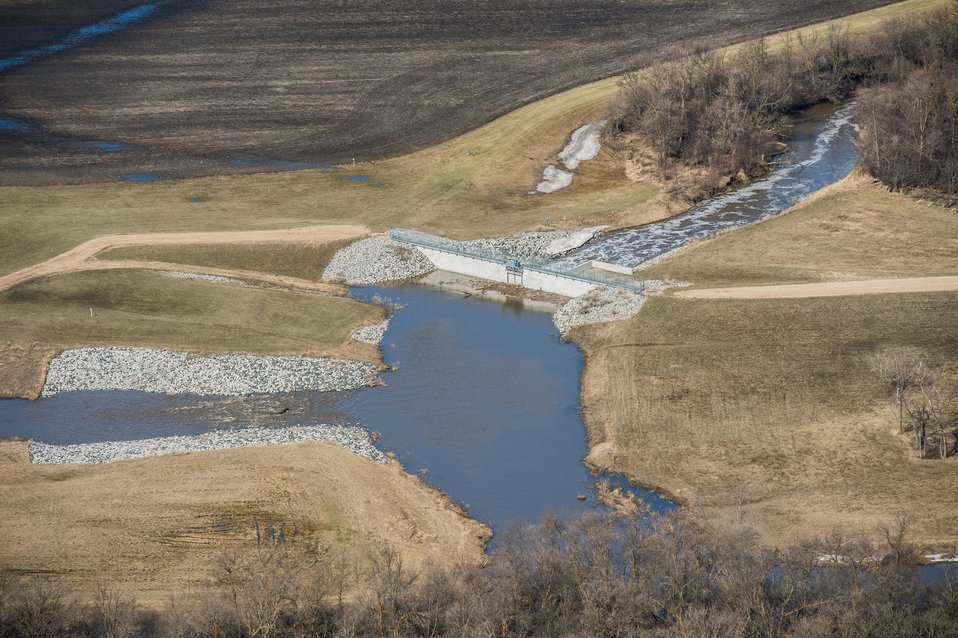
Snake River Diversion, a Public Law PL83-566 Small Watershed Program, at Warren, MN, on Wednesday, May 1, 2013. For information about this and other programs from the USDA Red River Basin Initiative (RRBI) please see www.mn.nrcs.usda.gov/news/features13/RRBI.html.